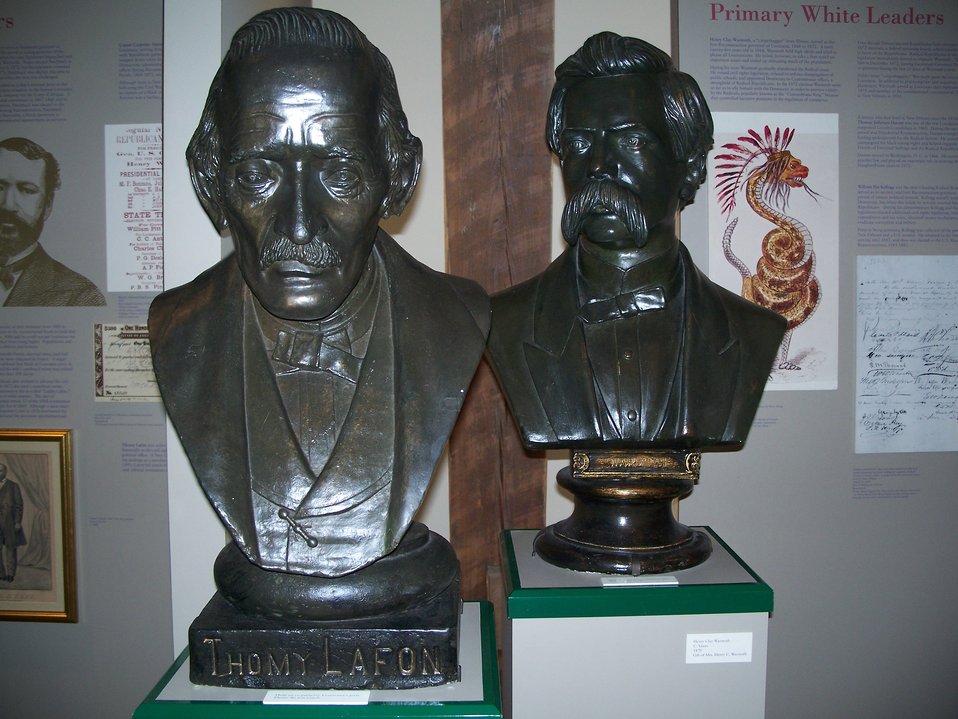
A bust of Barthelemy Lafon in the Cabildo in New Orleans, LA.